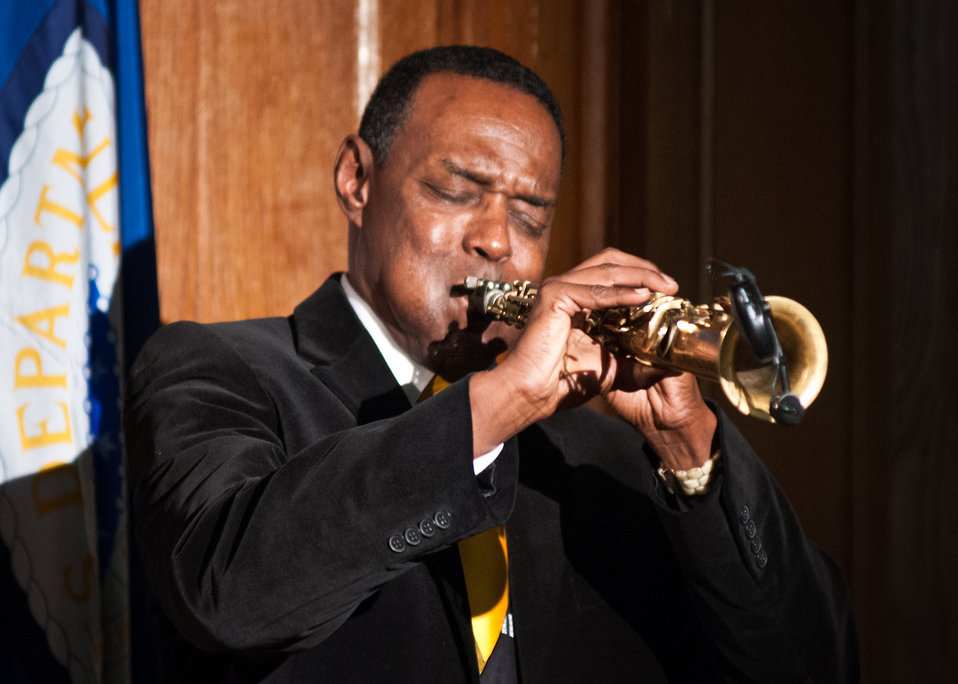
J. Plunky Branch of the Afro-Funk Jazz Group, “Plunky and Oneness” performs a saxophone solo of The Negro National Anthem at the National Service Day and Martin Luther King Celebration in honor of Dr. Martin Luther King Jr.’s contributions to the Civil Rights Movement at the United States Department of Agriculture in Washington, D.C., on Thursday, January 12, 2012.